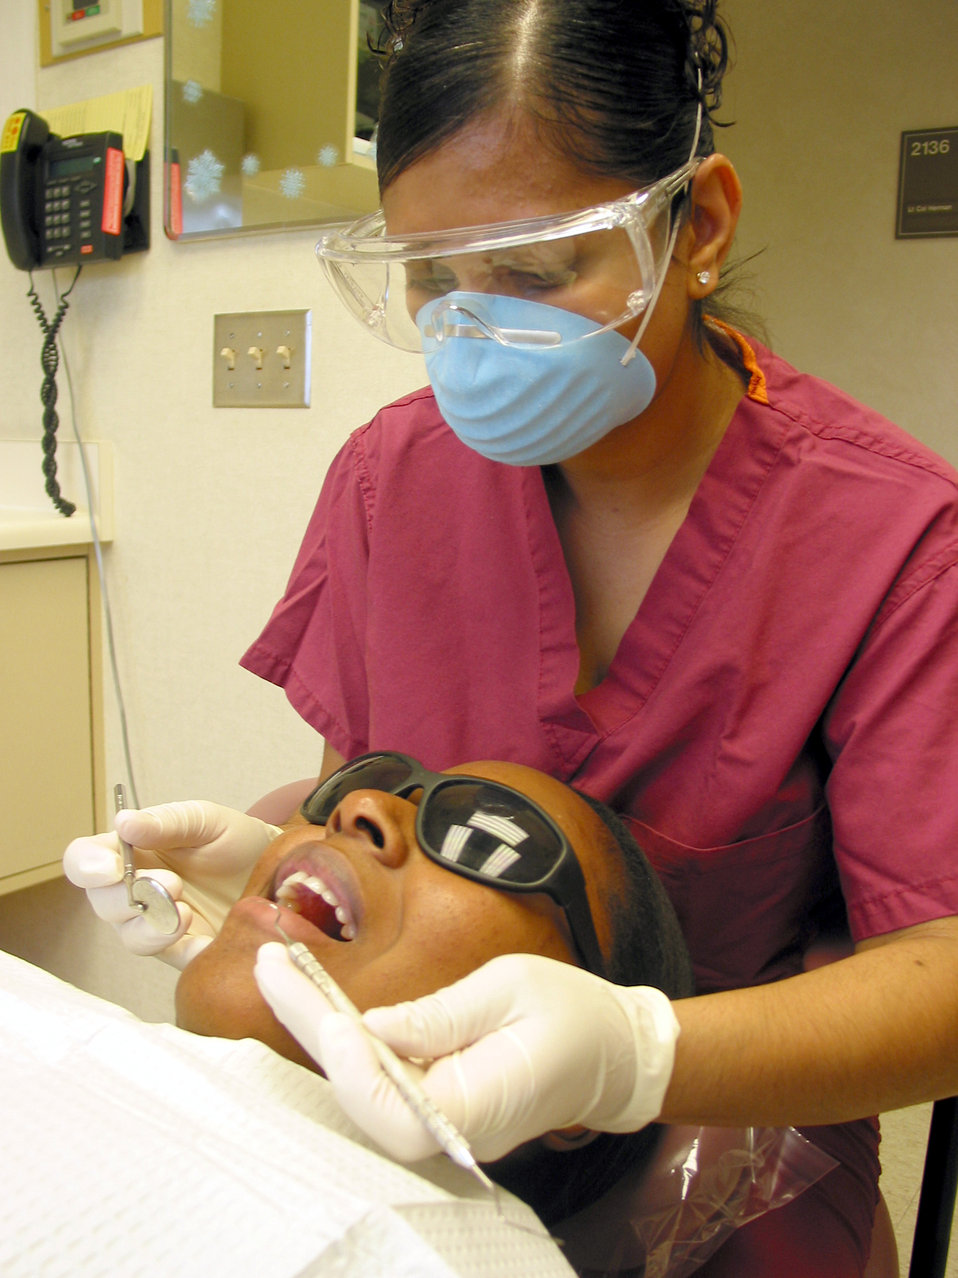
Cleaning teeth

CHARLESTON AIR FORCE BASE, S.C. -- Tech. Sgt. Alycia Miller, a dental technician from Sheppard Air Force Base, Texas, cleans a patient's teeth. Sergeant Miller is enrolled in an Air Force-sponsored dental hygiene training scholarship program at Trident Technician College in Charleston, S.C.